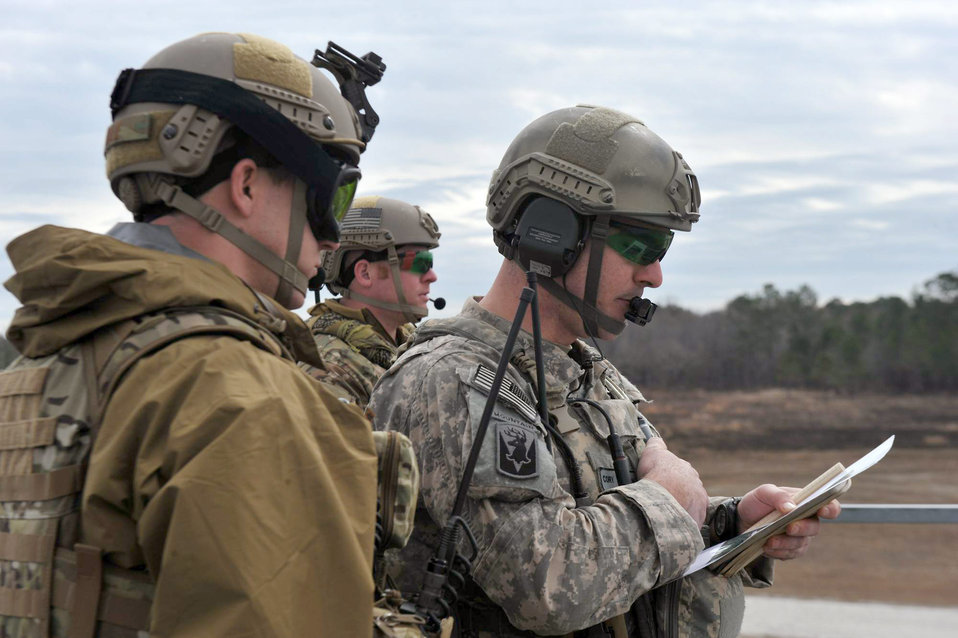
TACP Airmen hone skills

Staff Sgt. Cory Welton performs his duties as a joint terminal attack controller Feb. 3, 2011, during a National Guard Bureau joint quarterly training exercise at Camp Townsend, Ga. Sergeant Welton is based out of Camp Murray, Wash.